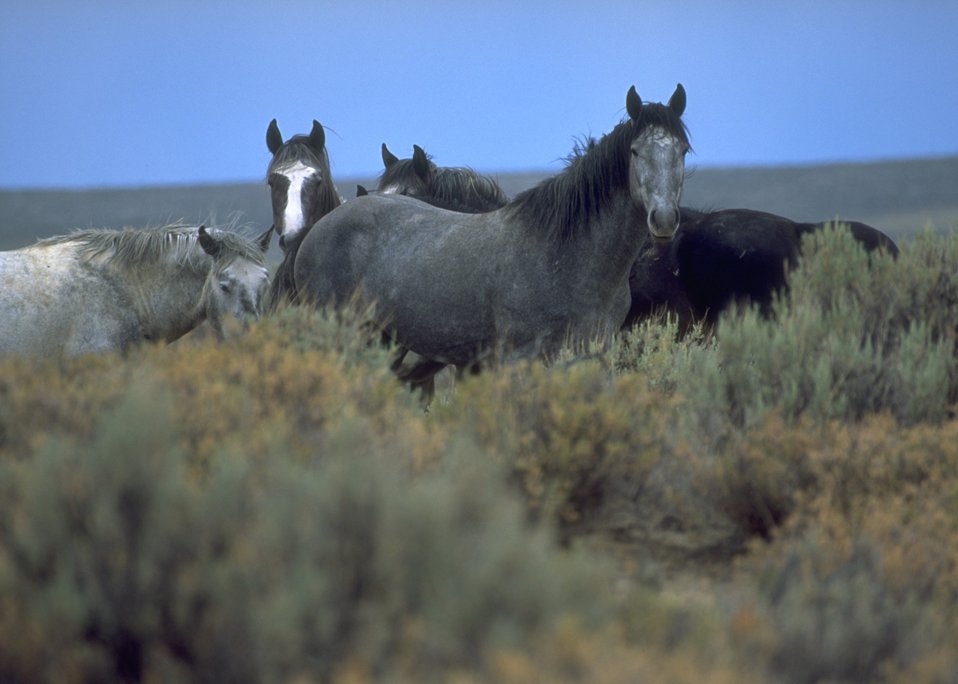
Wild horses, Rock Springs Field Office.